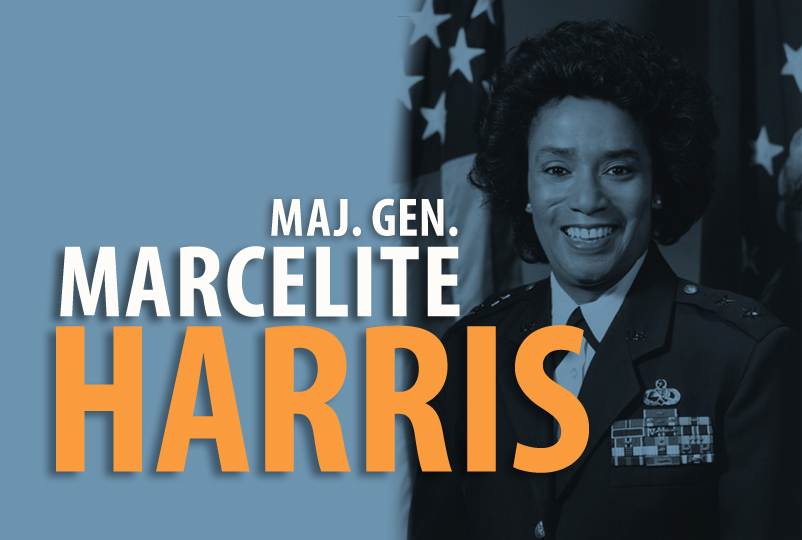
Maj. Gen. Marcelite Harris